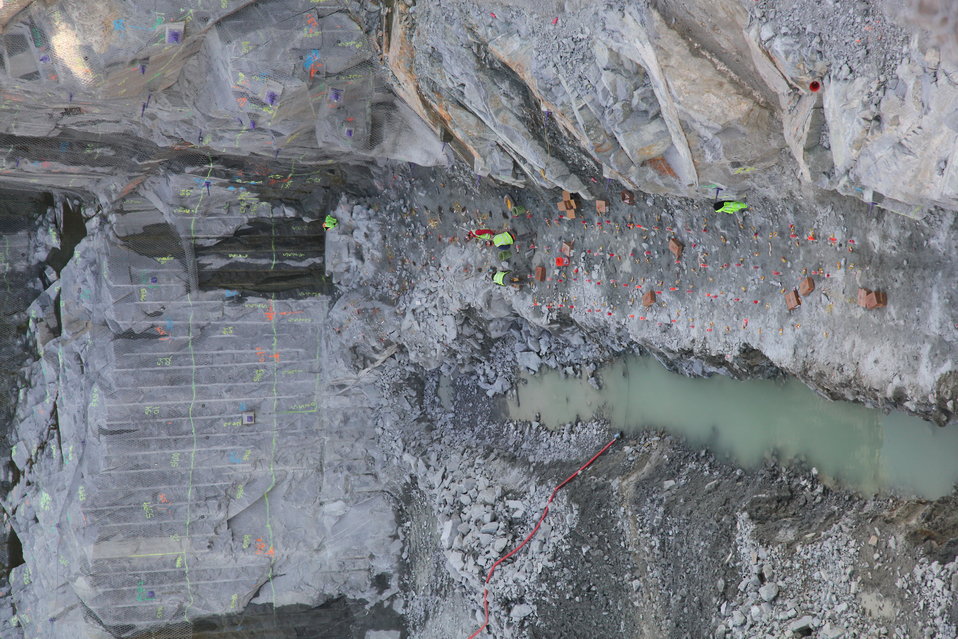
Setting blasts at the Folsom Dam auxiliary spillway

Contractors for the U.S. Army Corps of Engineers Sacramento District set blasts at the excavation site for the Folsom Dam auxiliary spillway in Folsom, Calif., March 23, 2012. Blasting for the shear zone, the spillway’s foundation, is nearing completion. The spillway, scheduled to be ready for use in 2017, will allow Folsom Dam to release water sooner and more safely. The project is part of the Folsom Dam Joint Federal Project, a joint effort of the Sacramento District, the U.S. Bureau of Reclamation, the Central Valley Flood Protection Board and the Sacramento Area Flood Control Agency to improve the safety of the dam and reduce flood risk for the greater Sacramento area.